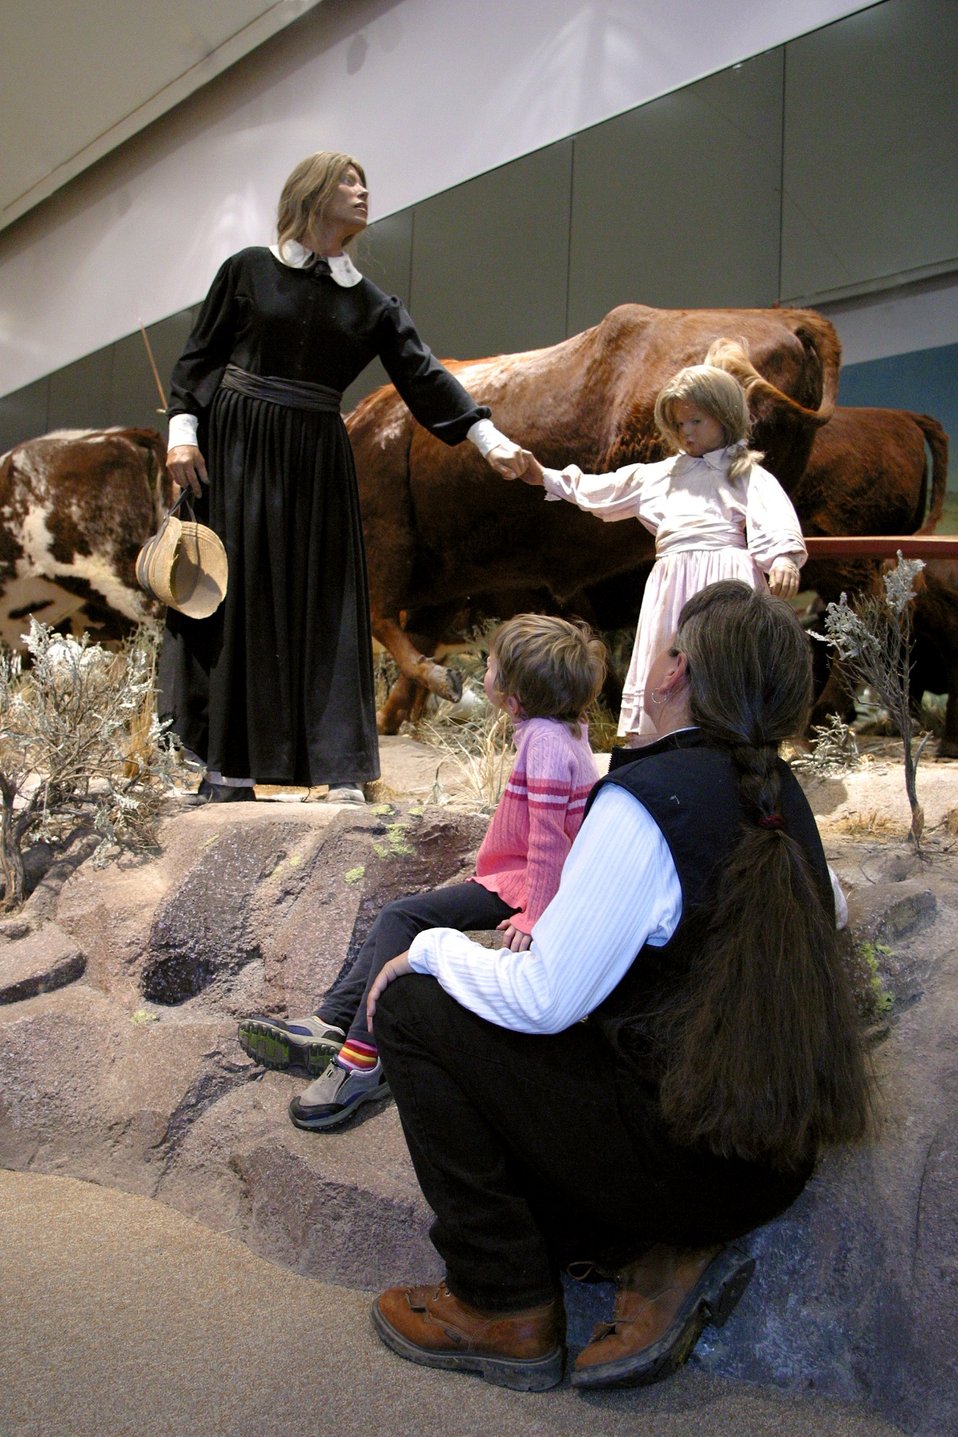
The main Gallery at the National Historic Oregon Trail Enterpretive Center depicts life size scenes along the Oregon Trail.